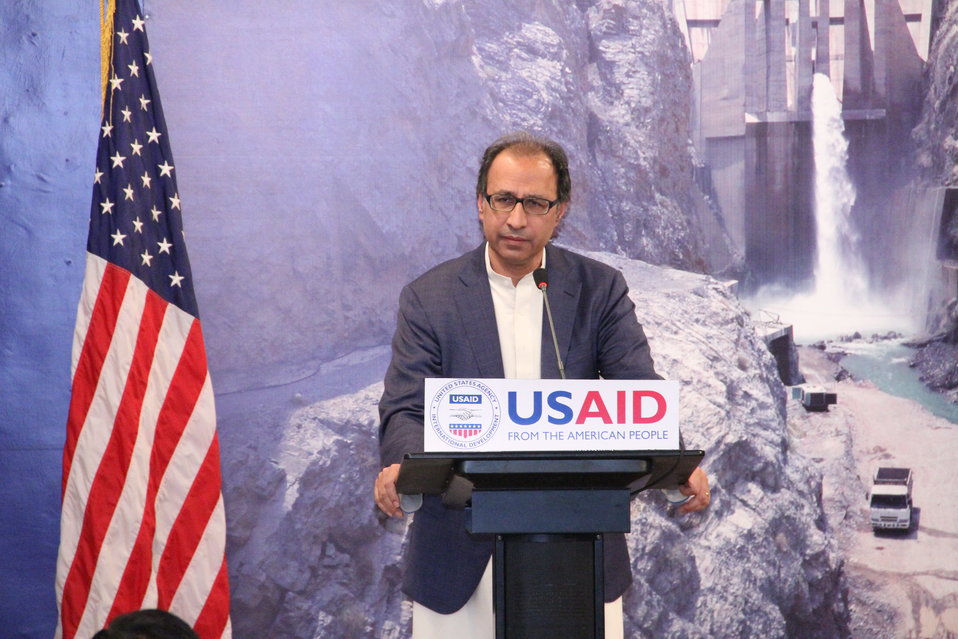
Photo Exhibition Celebrate US-PAK Cooperation at PNCA, Islamabad on April 13, 2012

Dr. Abdul Hafeez Sheikh, Federal Minister for Finance Address the Participants & media